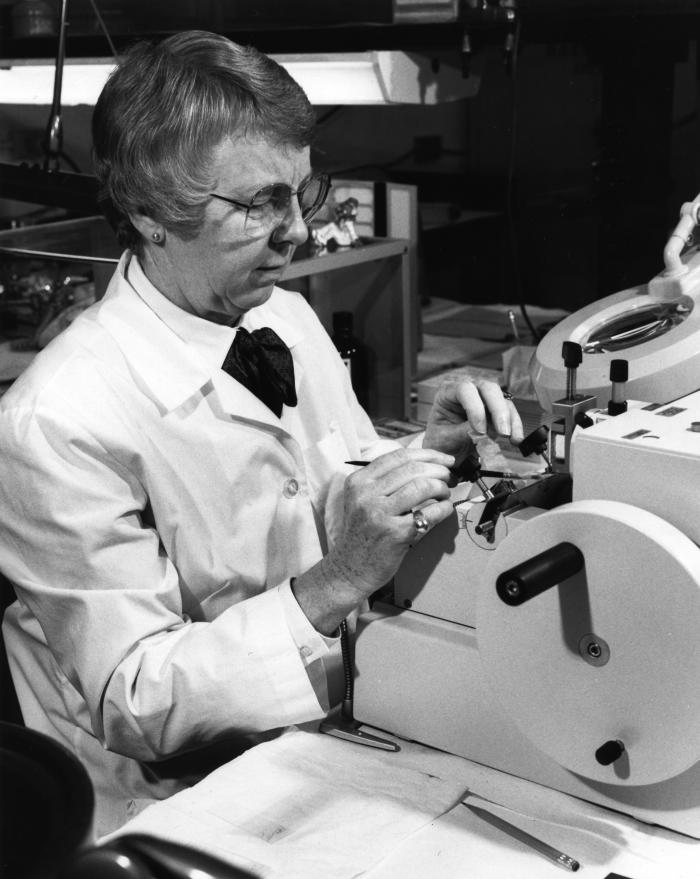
Billie Swisher, H.T./H.T.L., a former CDC histotechnologist in the Experimental Pathology Branch, was shown here operating an automatic tissue processor, in order to prepare tissue for staining.